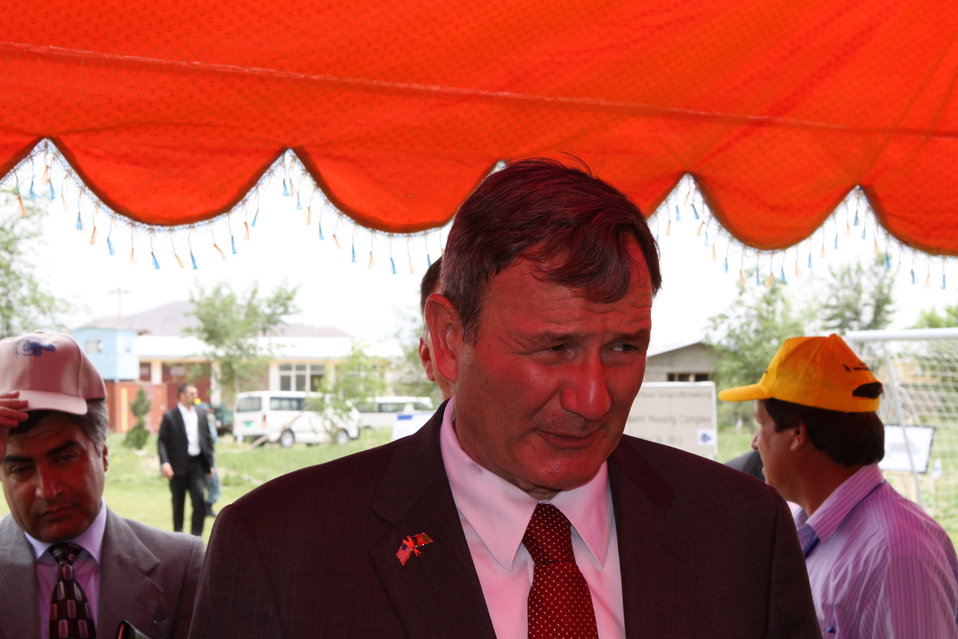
100526 AUAF Graduation 354